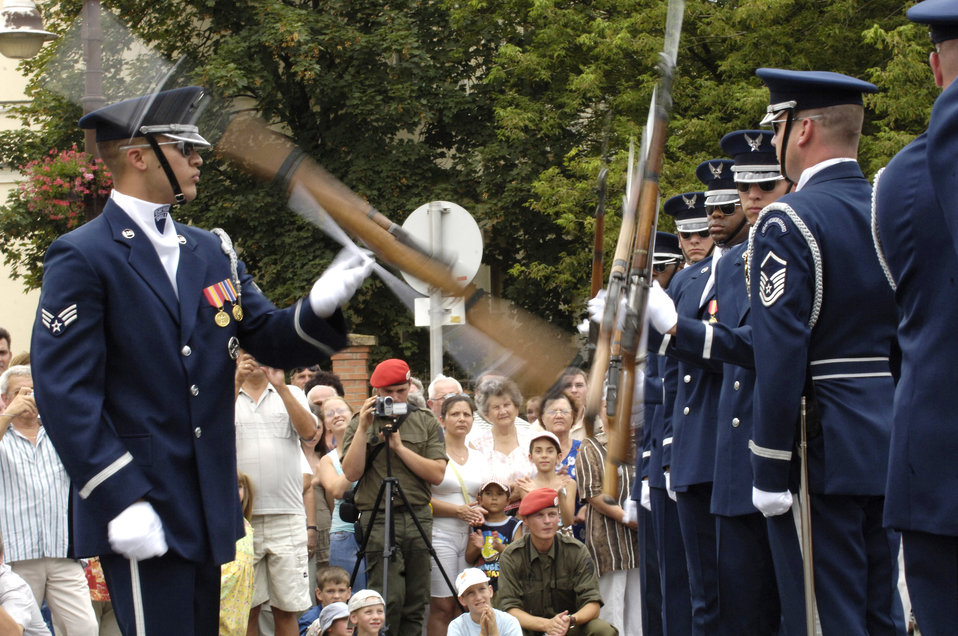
Air Force precision in Hungary

Senior Airman Ruben Chavez and members of the U.S. Air Force Honor Guard Drill Team, perform their 16-person routine July 28 in Miskolc City, Hungary, as part of the international Regimentfest armed forces showcase. The drill team, the traveling component of the Air Force Honor Guard, is visiting three countries across central Europe.